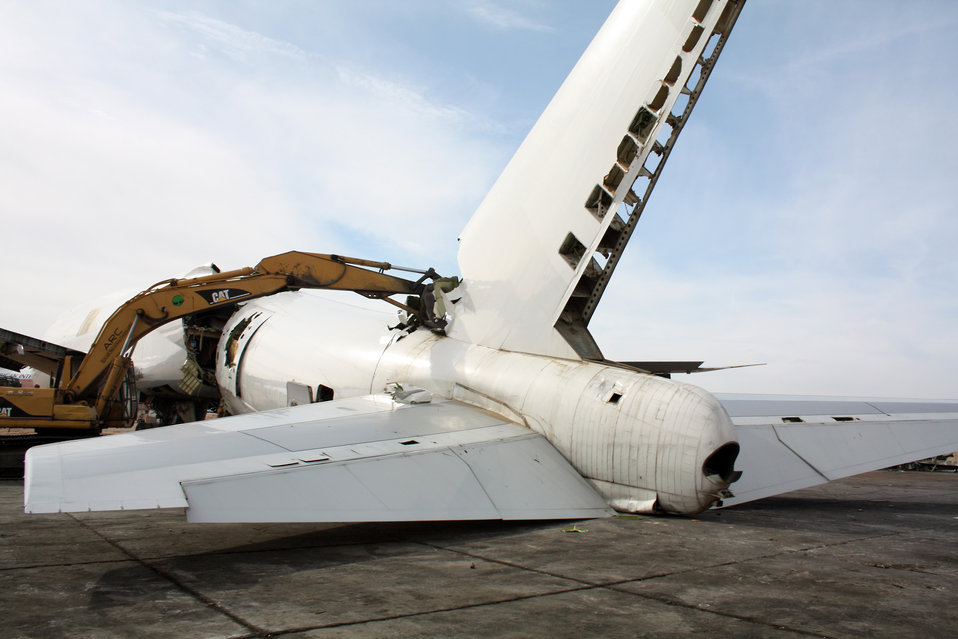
Green businesses

A Boeing 747 cargo plane is demolished for recycling by workers at the Aircraft Recycling Corporation at the former George Air Force Base in Victorville, Calif. About 80 to 85 percent of an airplane is recyclable.